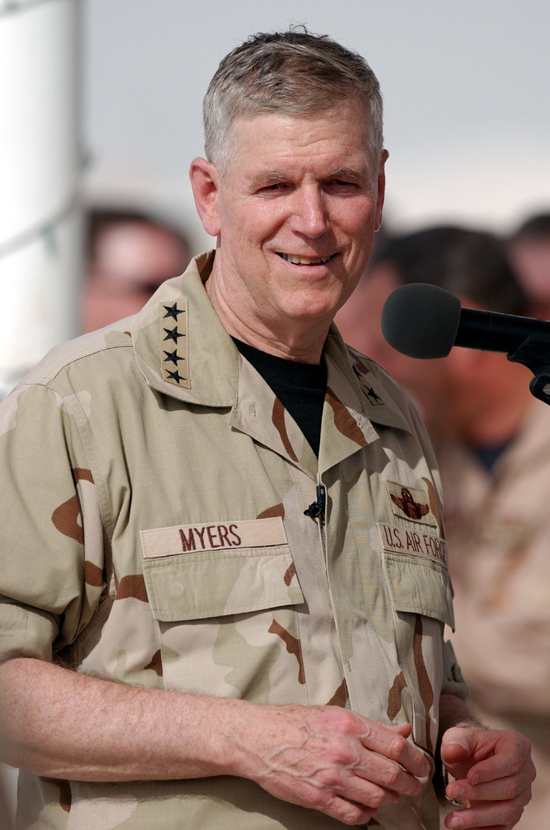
Myers visits forward location

OPERATION IRAQI FREEDOM -- Chairman, Joint Chiefs of Staff, General Richard B. Myers, speaks to a group of Air Force members at a forward deployed location during his trip throughout the Gulf region.